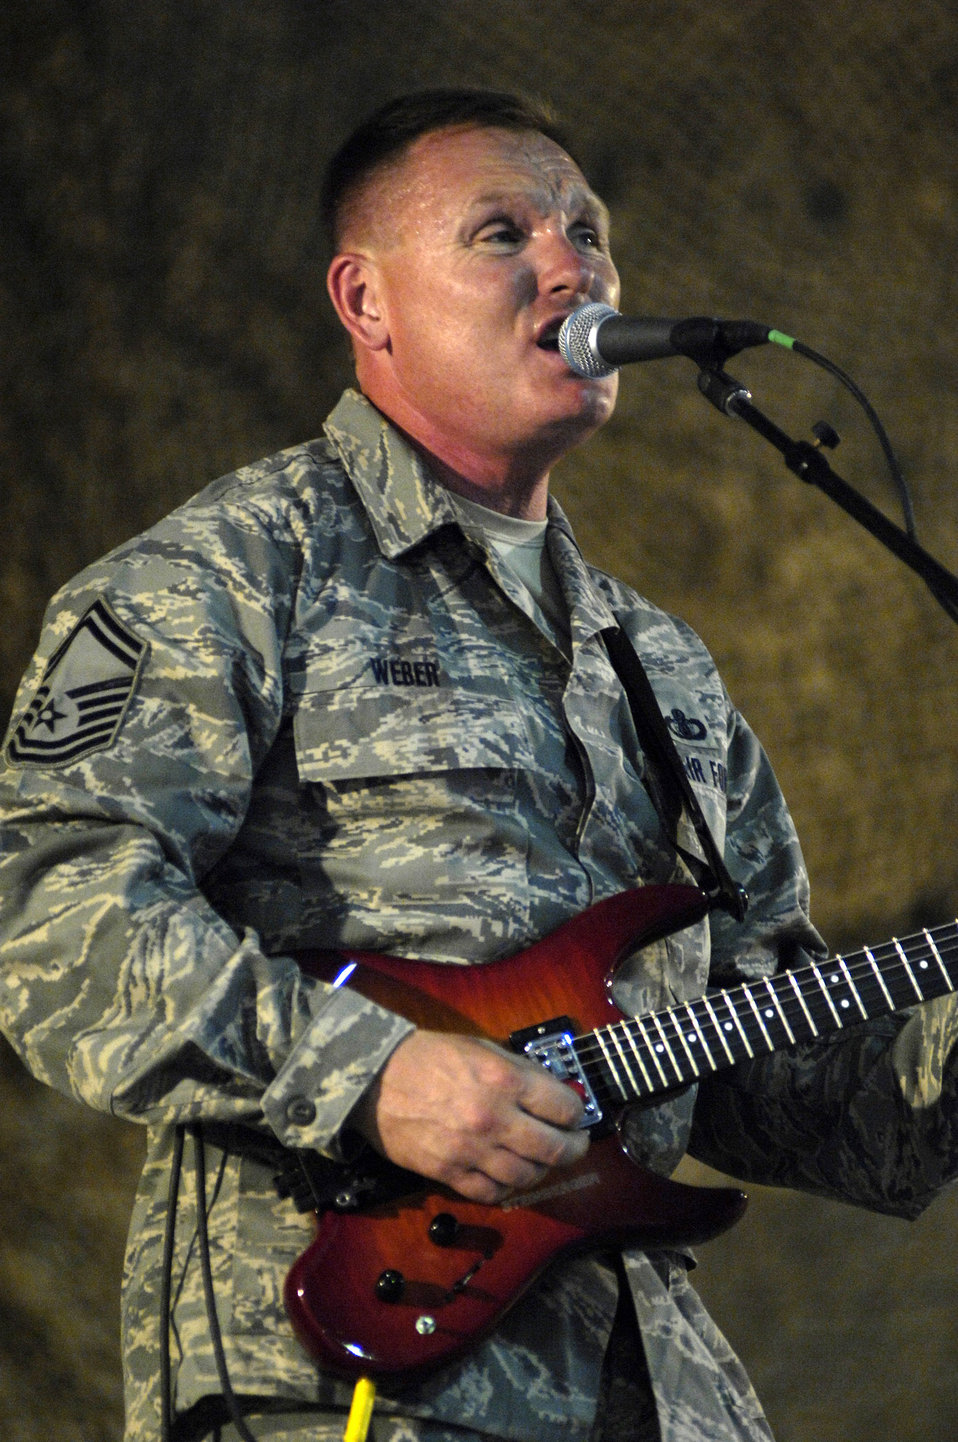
'Falcon' lands in Afghanistan

Senior Master Sgt. James Weber sings during a show June 22 at Bagram Air Base, Afghanistan. The U.S. Air Forces Central Band